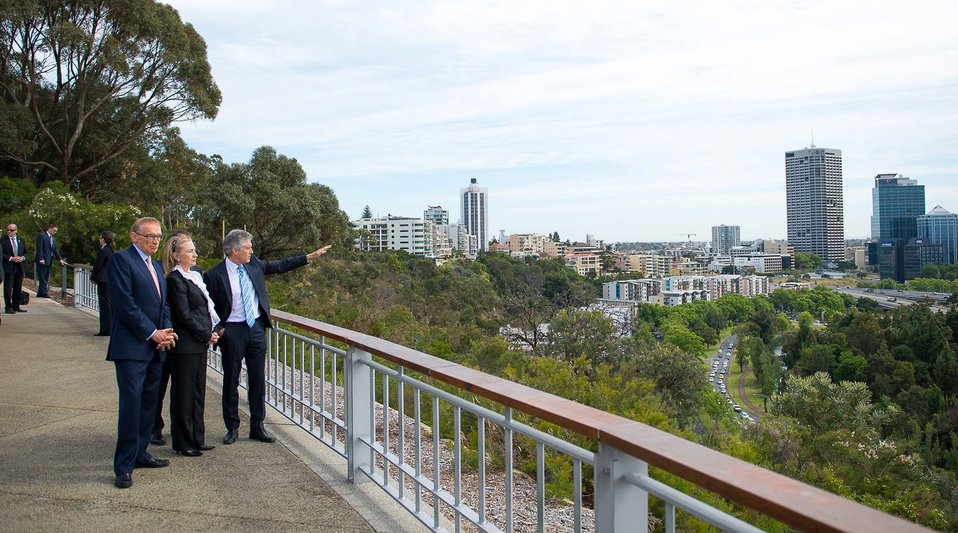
Australian Ministers Smith and Carr and Secretary Clinton View the City of Perth

Australian Defense Minister Stephen Smith, left, U.S. Secretary of State Hillary Rodham Clinton, and Australian Foreign Minister Robert Carr, right, view the city of Perth at Kings Park and Botanic Garden in Australia, November 14, 2012. [U.S. Embassy in Canberra, Australia photo by Travis Longmore/ Public Domain]